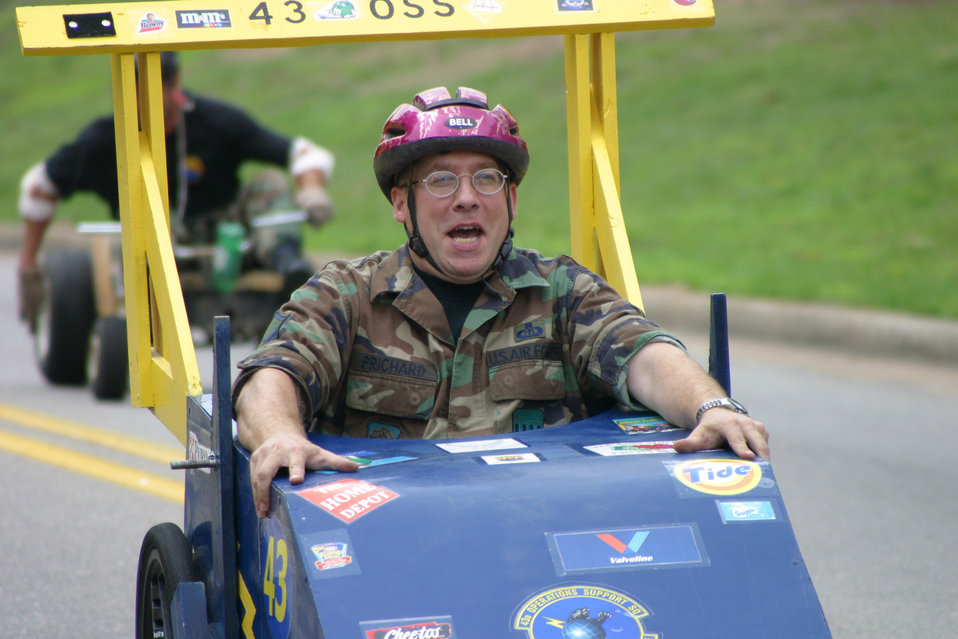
On his soap box

POPE AIR FORCE BASE, N.C. -- Master Sgt. Ted Prichard tries to keep his car steady at the Pope Box Derby here recently. He is assigned to the 43rd Operations Support Squadron.